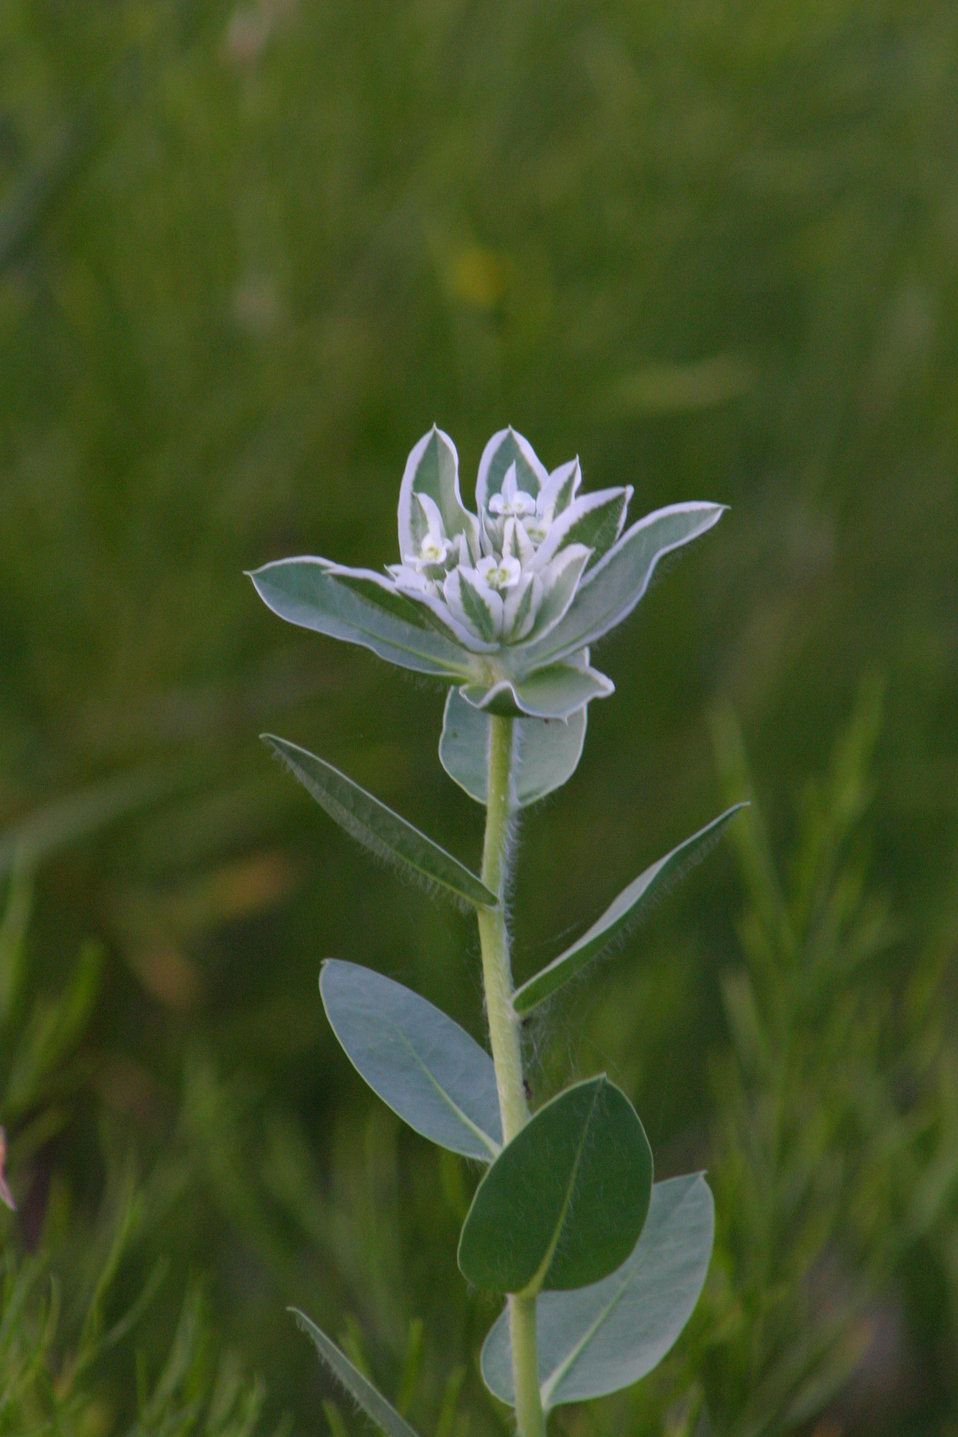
Snow-on-the-mountain

Euphorbia marginata, Wichita Mountains Wildlife Refuge.